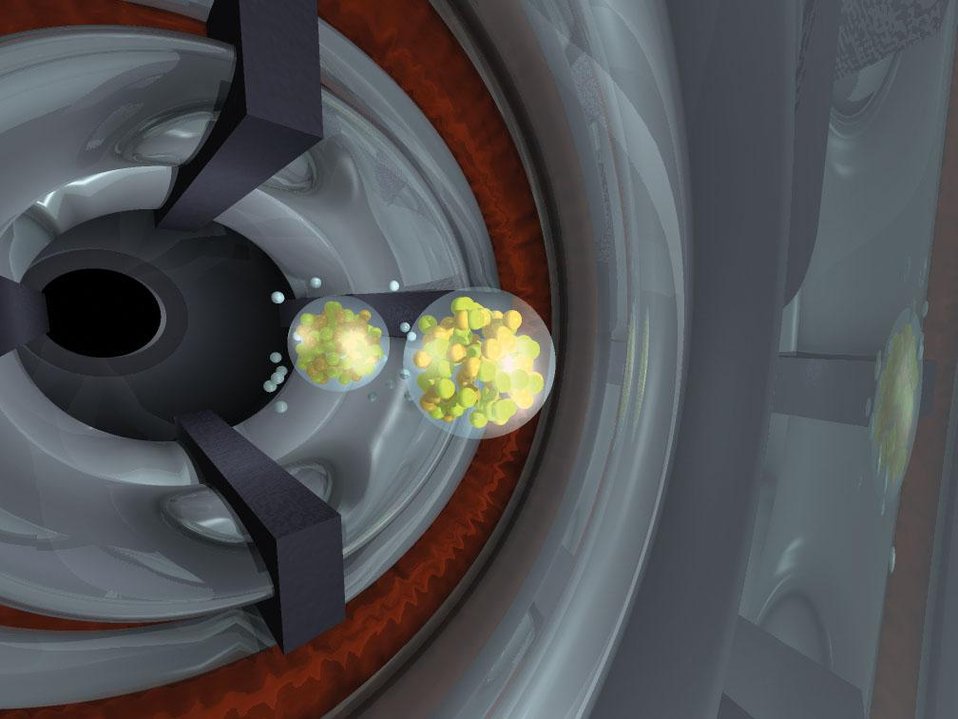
SIMULATION OF AN ACCELERATED CALCIUM-43 ION AND AN AMERICIUM-243 TARGET ATOM JUST BEFORE THEY COLLIDE.

SCIENTISTS AT DOE'S LAWRENCE LIVERMORE NATIONAL LABORATORY, IN COLLABORATION WITH RESEARCHERS FROM THE JOINT INSTITUTE OF NUCLEAR RESEARCH (JINR) IN RUSSIA, HAVE DISCOVERED THE TWO NEWEST SUPER-HEAVY ELEMENTS, ELEMENT 113 AND ELEMENT 115. IN THESE DECAY CHAINS, ELEMENT 113 IS PRODUCED VIA THE ALPHA DECAY OF ELEMENT 115. THE EXPERIMENTS PRODUCED FOUR ATOMS EACH OF THE TWO ELEMENTS THROUGH THE FUSION REACTION OF CALCIUM-48 NUCLEI IMPINGING ON AN AMERICIUM-243 TARGET.